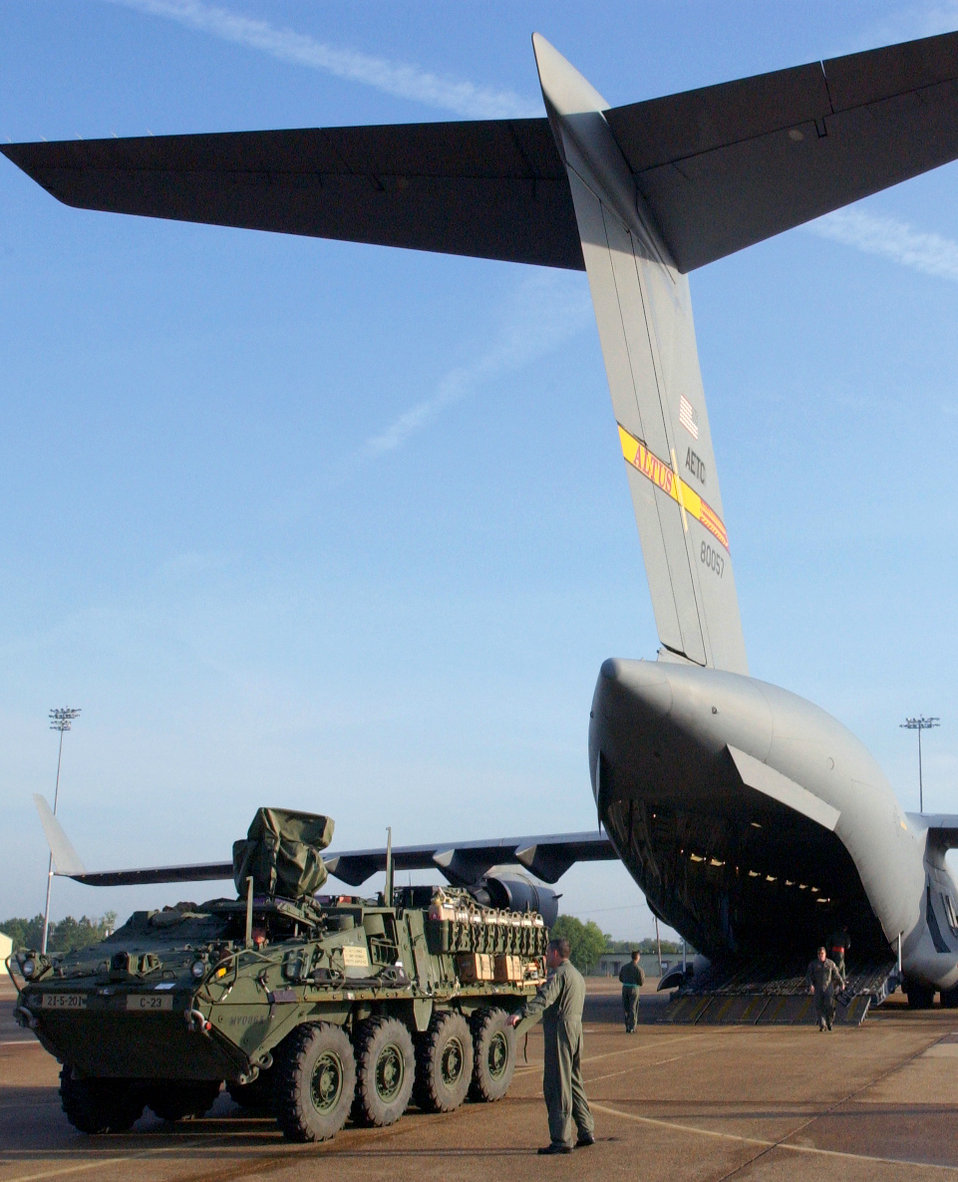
Stryker gets a lift

ALEXANDRIA, La. -- A Stryker personnel carrier is unloaded from a C-17 Globemaster III from Altus Air Force Base, Okla., during a joint service exercise mission involving members of the 97th Air Mobility Wing and the Army's Stryker Brigade Combat Team.